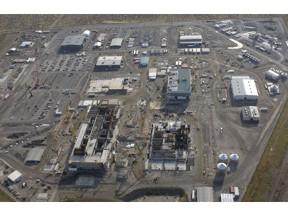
Hanford WTP Construction

The Waste Treatment Plant Construction Site, located at Hanford, WA, September 2006, clockwise from top right, Low-Activity Waste Facility, High-Level Waste Facility, Pretreatment Facility, and Analytical Laboratory.